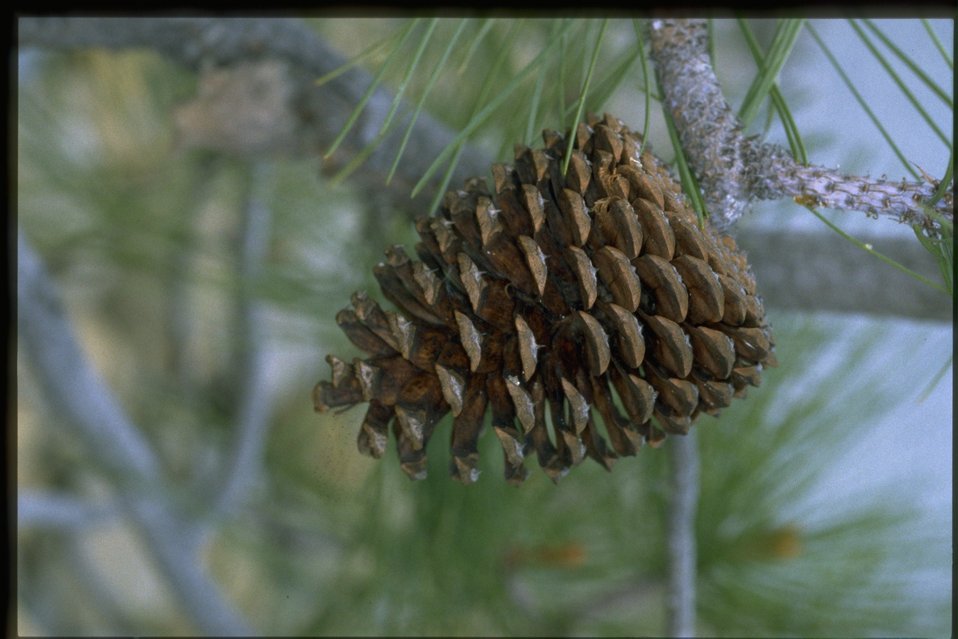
Closeup shot of pine cone from Pinus jeffreyi.